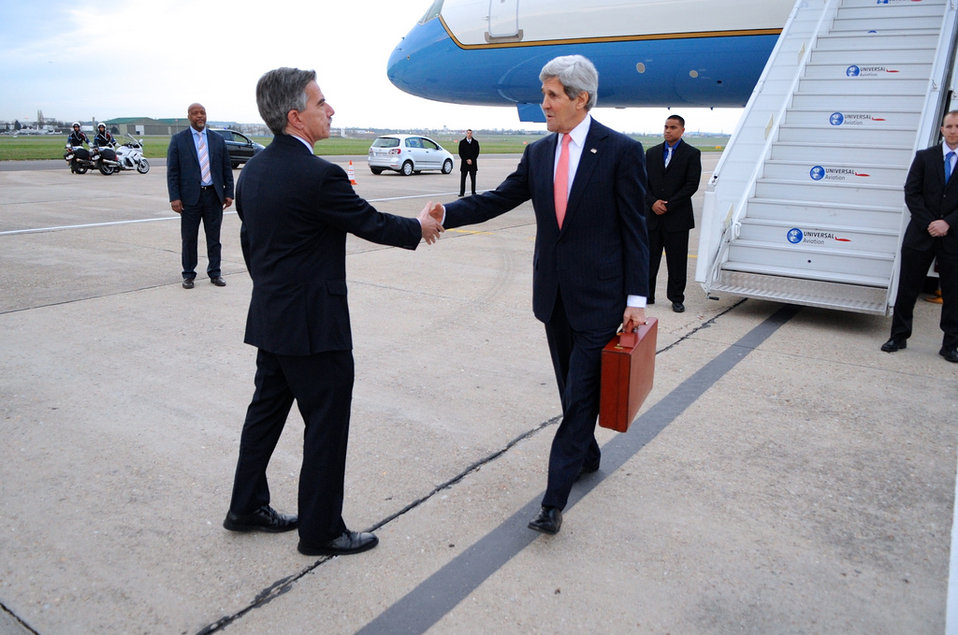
Secretary Kerry is Greeted by Charge d'Affaires Taplin Upon Arrival in Paris

U.S. Secretary of State John Kerry is greeted by U.S. Embassy Paris Charge d'Affaires Mark Taplin as he arrives at Le Bourget Airport on March 29, 2014, after breaking off his return to the United States from Saudi Arabia to meet in France with Russian Foreign Minister Sergey Lavrov to discuss Ukraine.